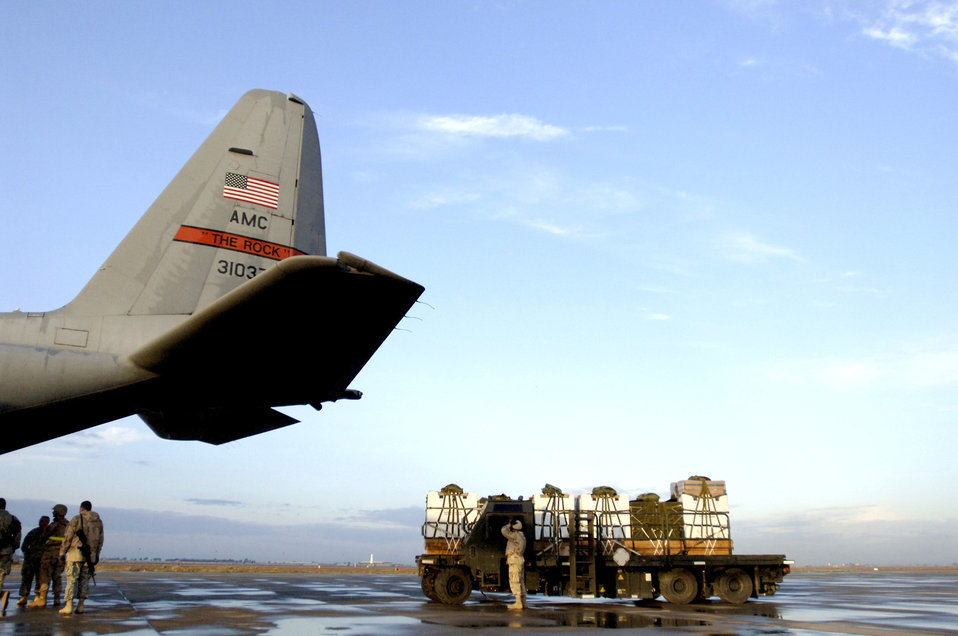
First JPADS airdrop over Iraq a success

Aerial port members load six 1,200-pound bundles of water and Meals, Ready to Eat onto a C-130 Hercules Feb. 16 at Balad Air Base, Iraq, in preparation for the first Improved Container Delivery System airdrop mission in support of Operation Iraqi Freedom. The aerial port members are assigned to the 332nd Expeditionary Logistics Readiness Squadron.